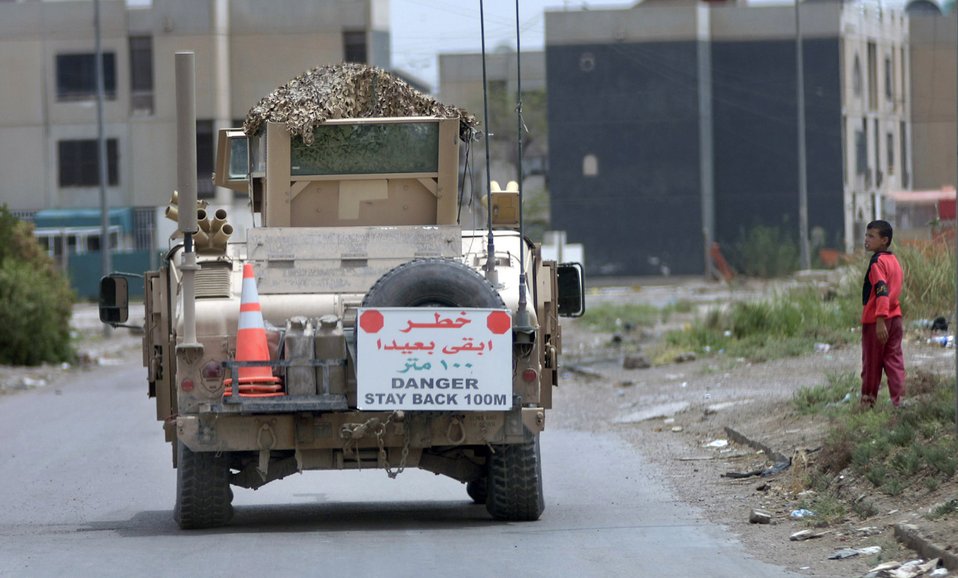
Dangerous road to progress

Det. 3, 732nd Expeditionary Security Forces Squadron members travel in up-armored vehicle convoys through the streets of Baghdad to perform police transition team missions of mentoring the Iraqi police May 9.